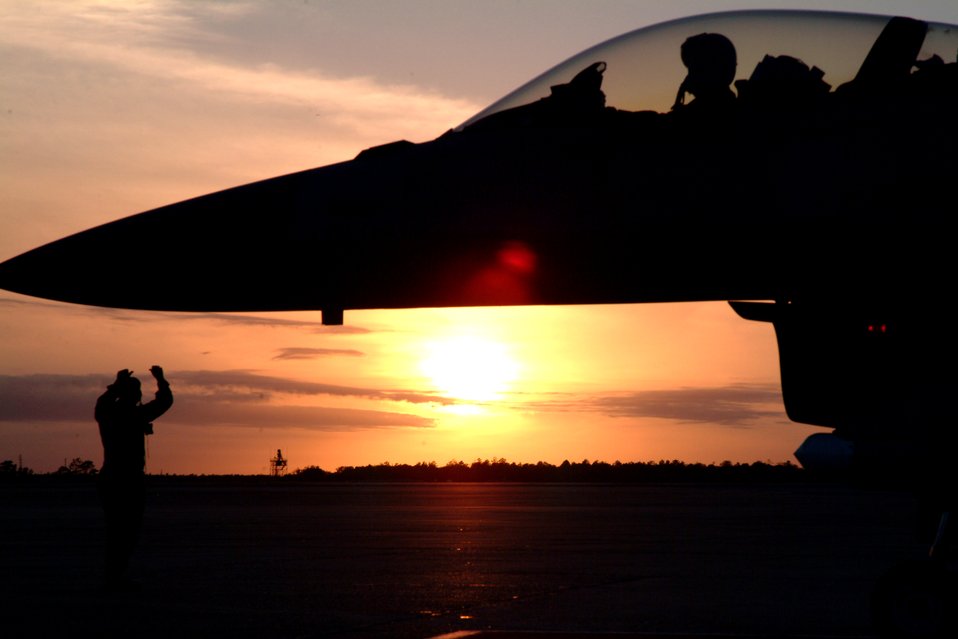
Final flight

Lt. Col. Anthony Franzel, 53rd Wing Safety Office chief, brings his F-16C Fighting Falcon to a stop one final time, guided by crew chief Airman 1st Class Steven Sisneros, 46th Aircraft Maintenance Squadron, after his fini-flight Feb. 26 at Eglin Air Force Base, Fla. The flight marks just more than 2,200 for Colonel Franzel?s 21-year Air Force flying career. He retires May 1.